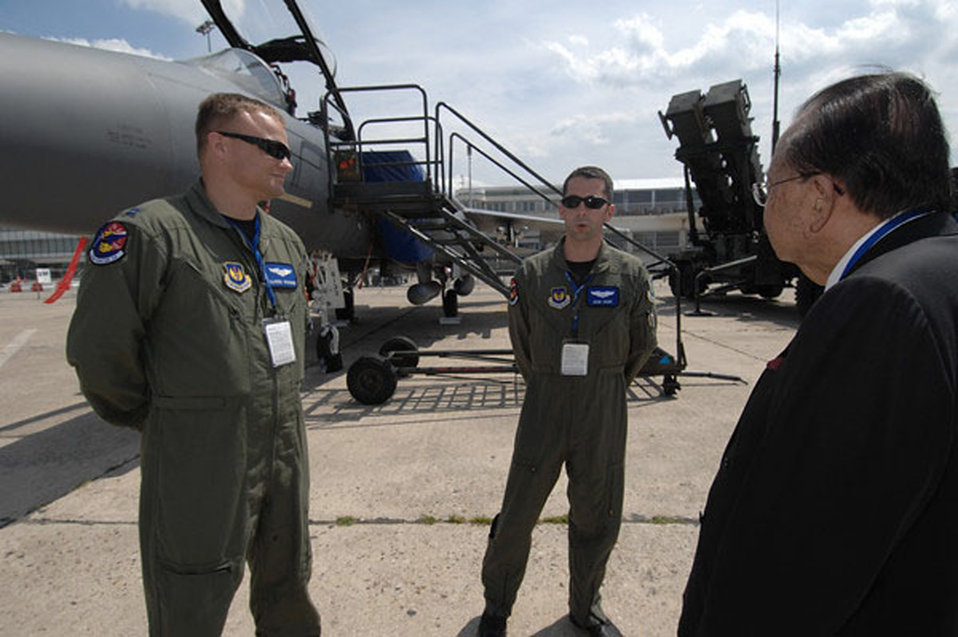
Secretary of the Air Force visit honors memorial and supports Paris Air Show

Capt. Darren Woodside (left), and Capt. Adam Court assigned to the 492nd Fighter Squadron, Royal Air Force Lakenheath, England, discuss the F-15E Strike Eagle jet fighter's combat capabilities with Senator Daniel K. Inouye of Hawaii at Le Bourget Airport, France. The F-15E is one of the several U.S. military aircraft exhibited June 15 to 20 at the Paris Air Show.